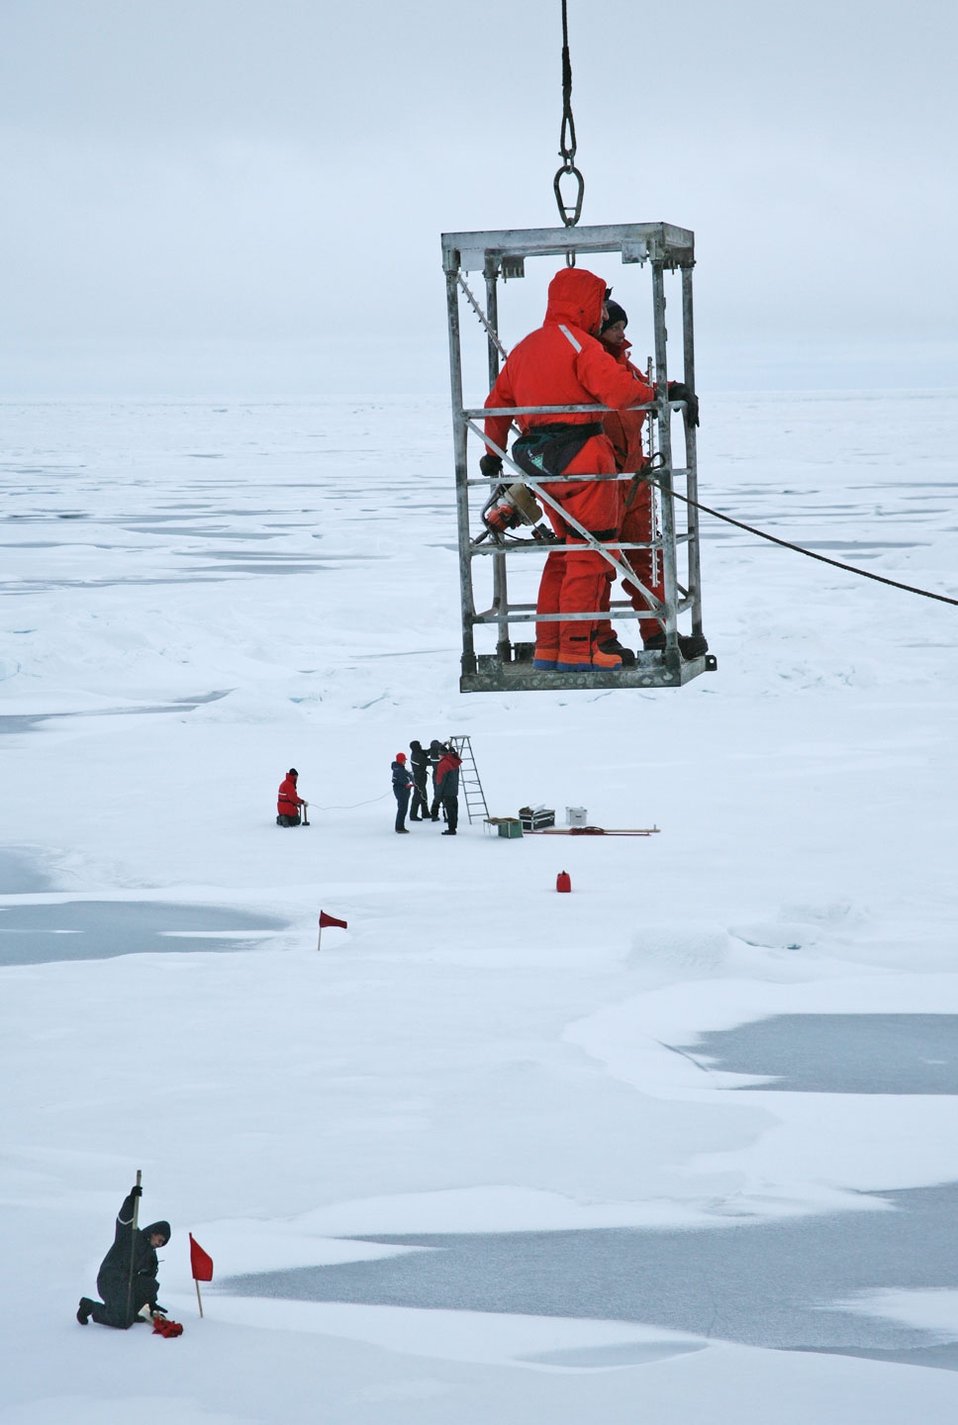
With no gangway available, scientists and crew had to be hoisted from the ship to the ice. NABOS 2006.